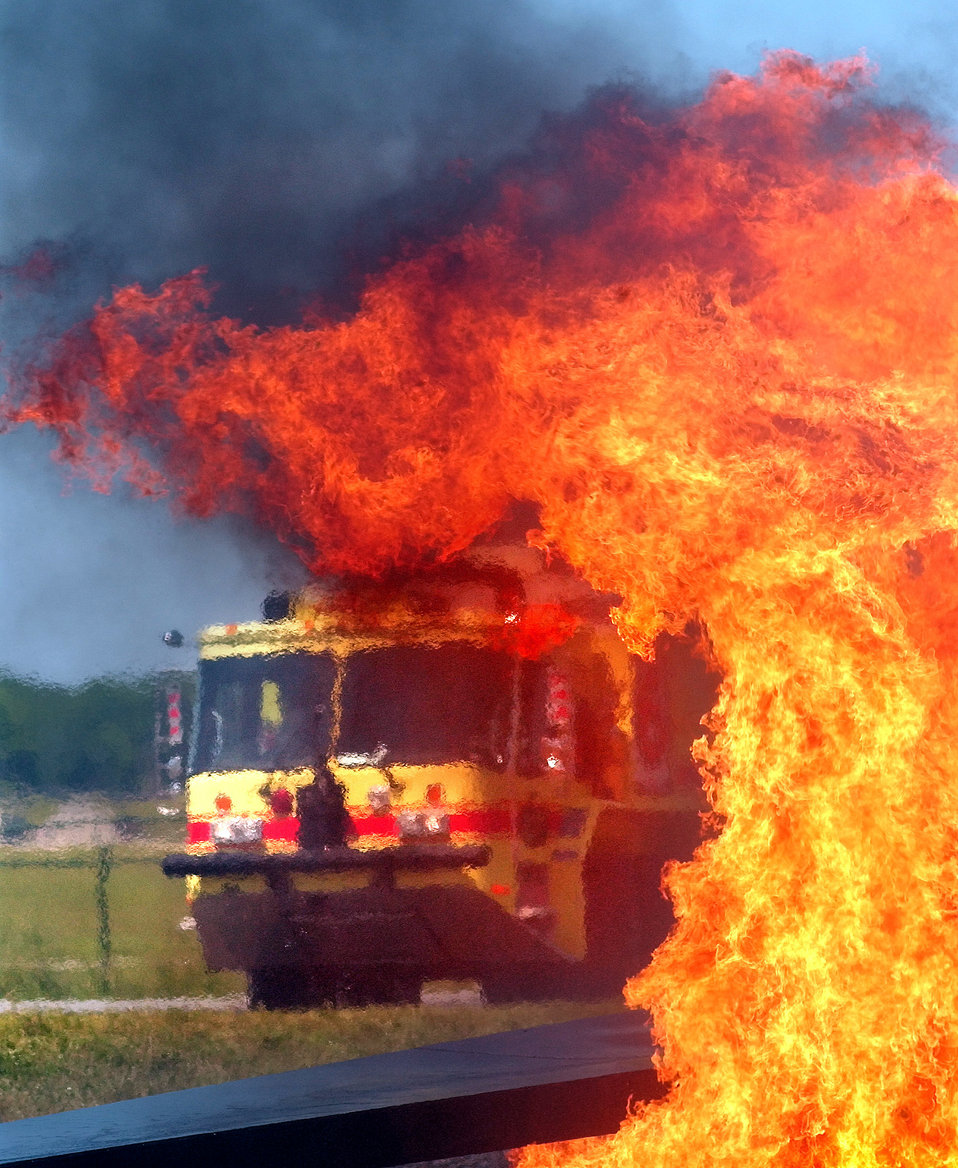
Hot training

DOVER AIR FORCE BASE, Del. -- Fire and emergency response personnel from the 436th Civil Engineer Squadron here respond to an aircraft training fire.